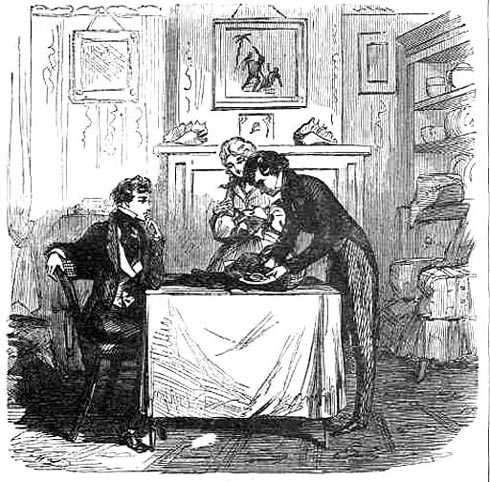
Herbert Pocket and Pip, par John McLenan